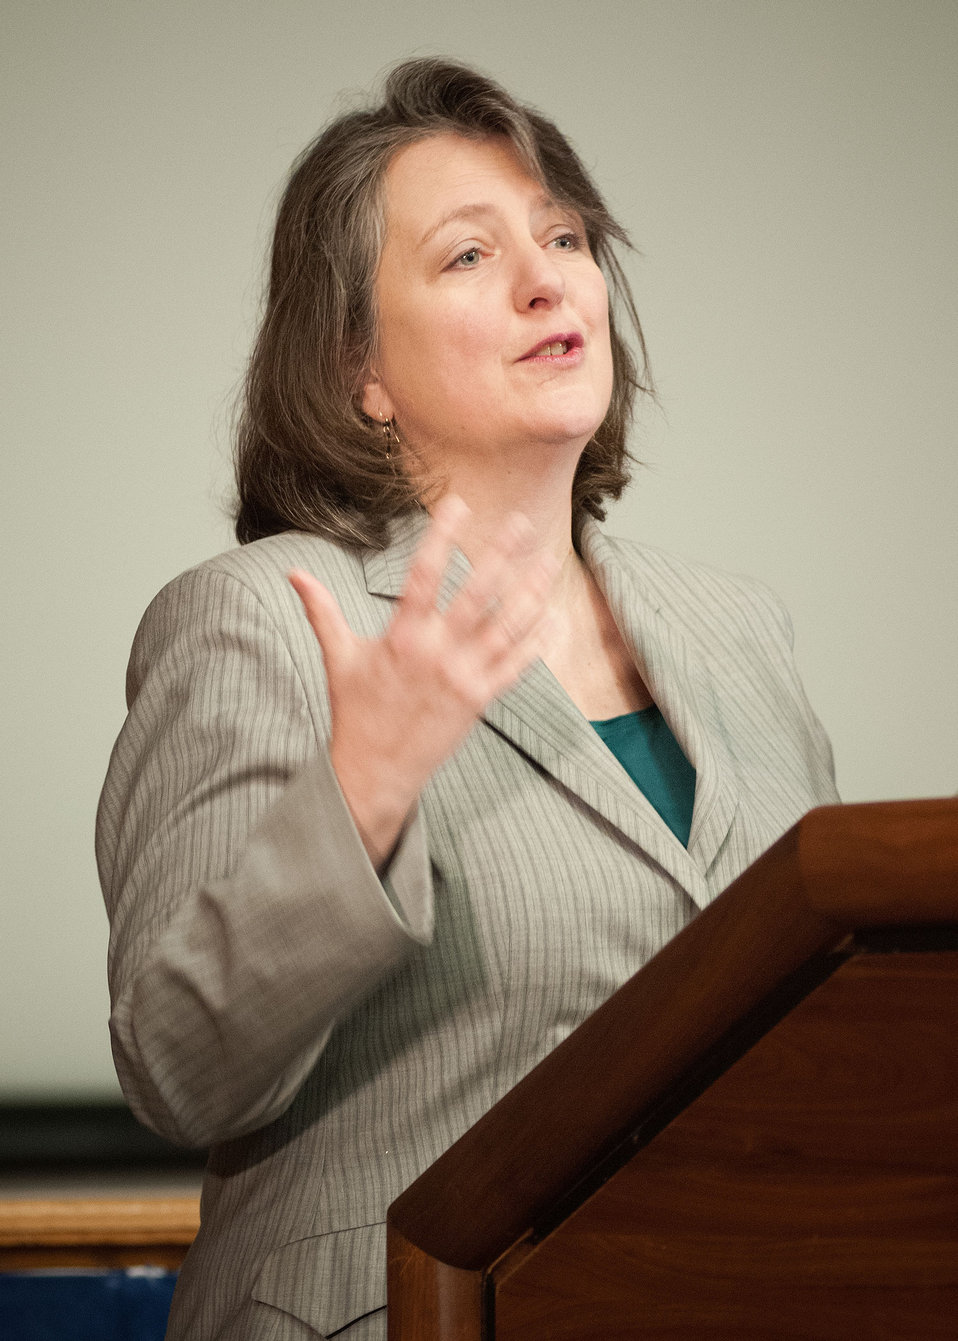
Agriculture Deputy Secretary Dr. Kathleen Merrigan introducs Agriculture Secretarty Tom Vilsack at the U.S. Department of Agriculture’s (USDA) Fourth Annual Cultural Transformation event held in Washington, D.C. on Tuesday, Dec. 4, 2012. The theme for the event “Faces of Cultural Transformation” Focusing on changing the way we serve our customers and cultural transformation’s benefits to employees.